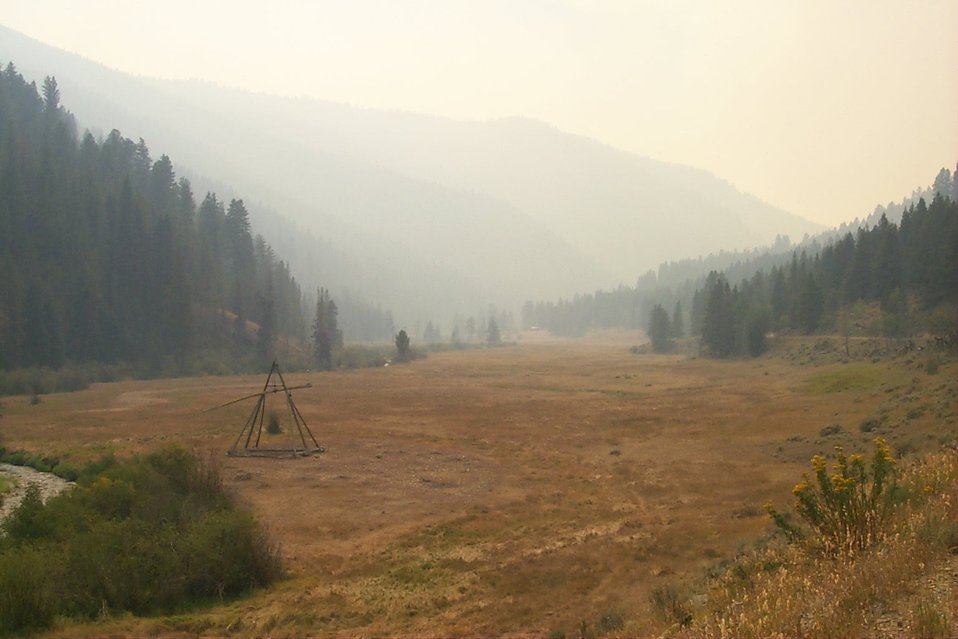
Smoke Fire Clearwater Fire Salmon Field Office USRD Upper Snake River District